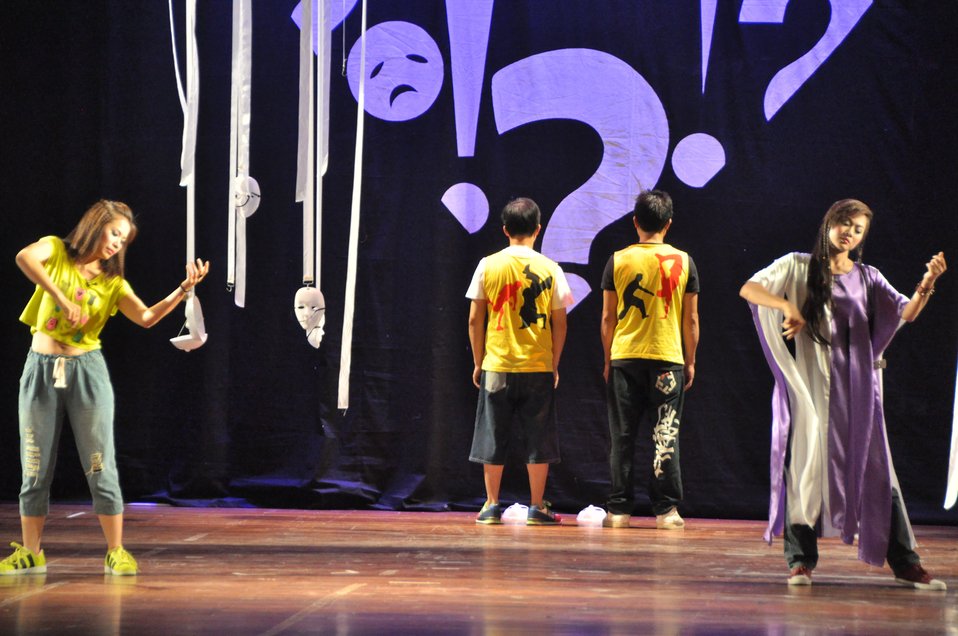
PEPFAR Musical Questions and Exclamations

Hanoi, May 17, 2013